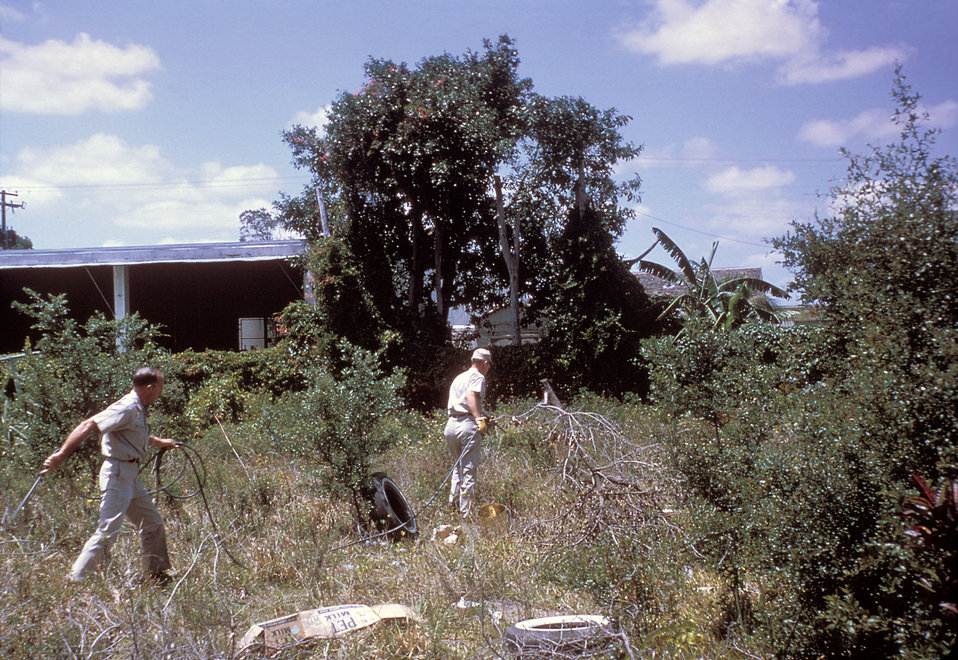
These men are spraying mosquito for larvae during the 1965 Aedes aegypti eradication program in Miami, Florida.